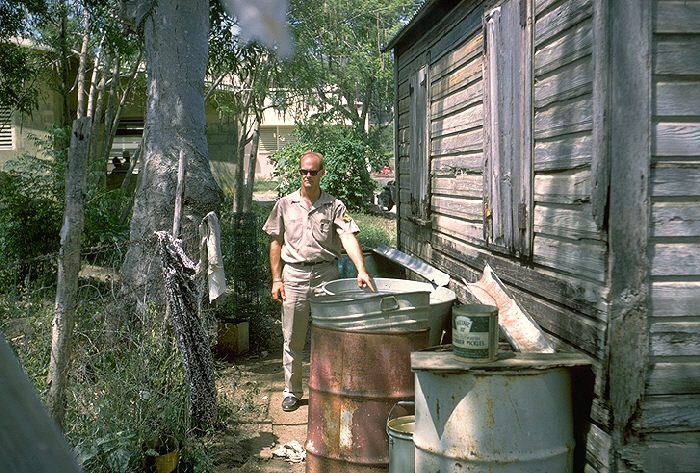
Robert Walsh by rain barrels, potential mosquito breeding site, St. Johns, Virgin Islands.